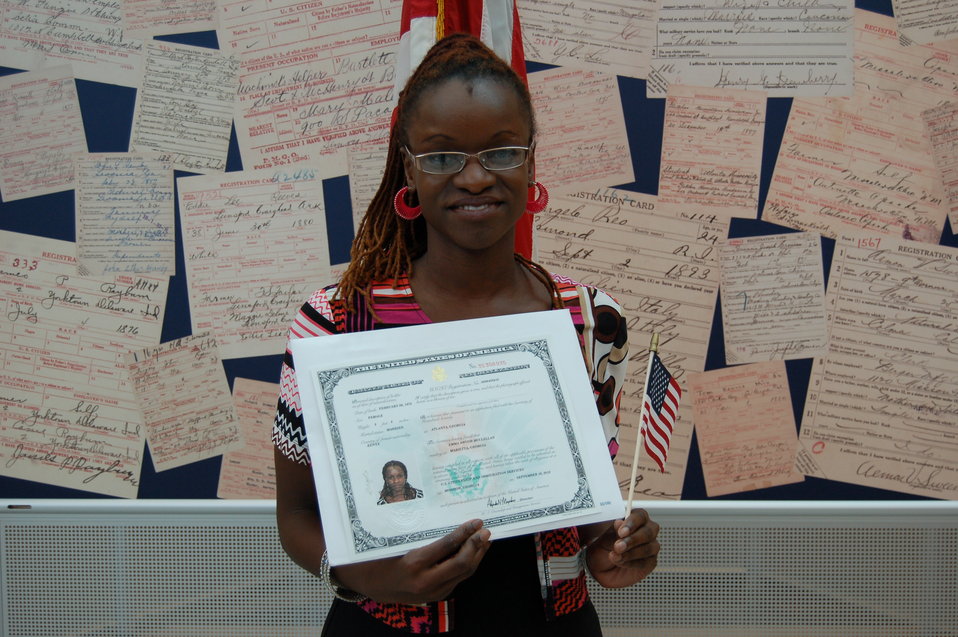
New Citizens